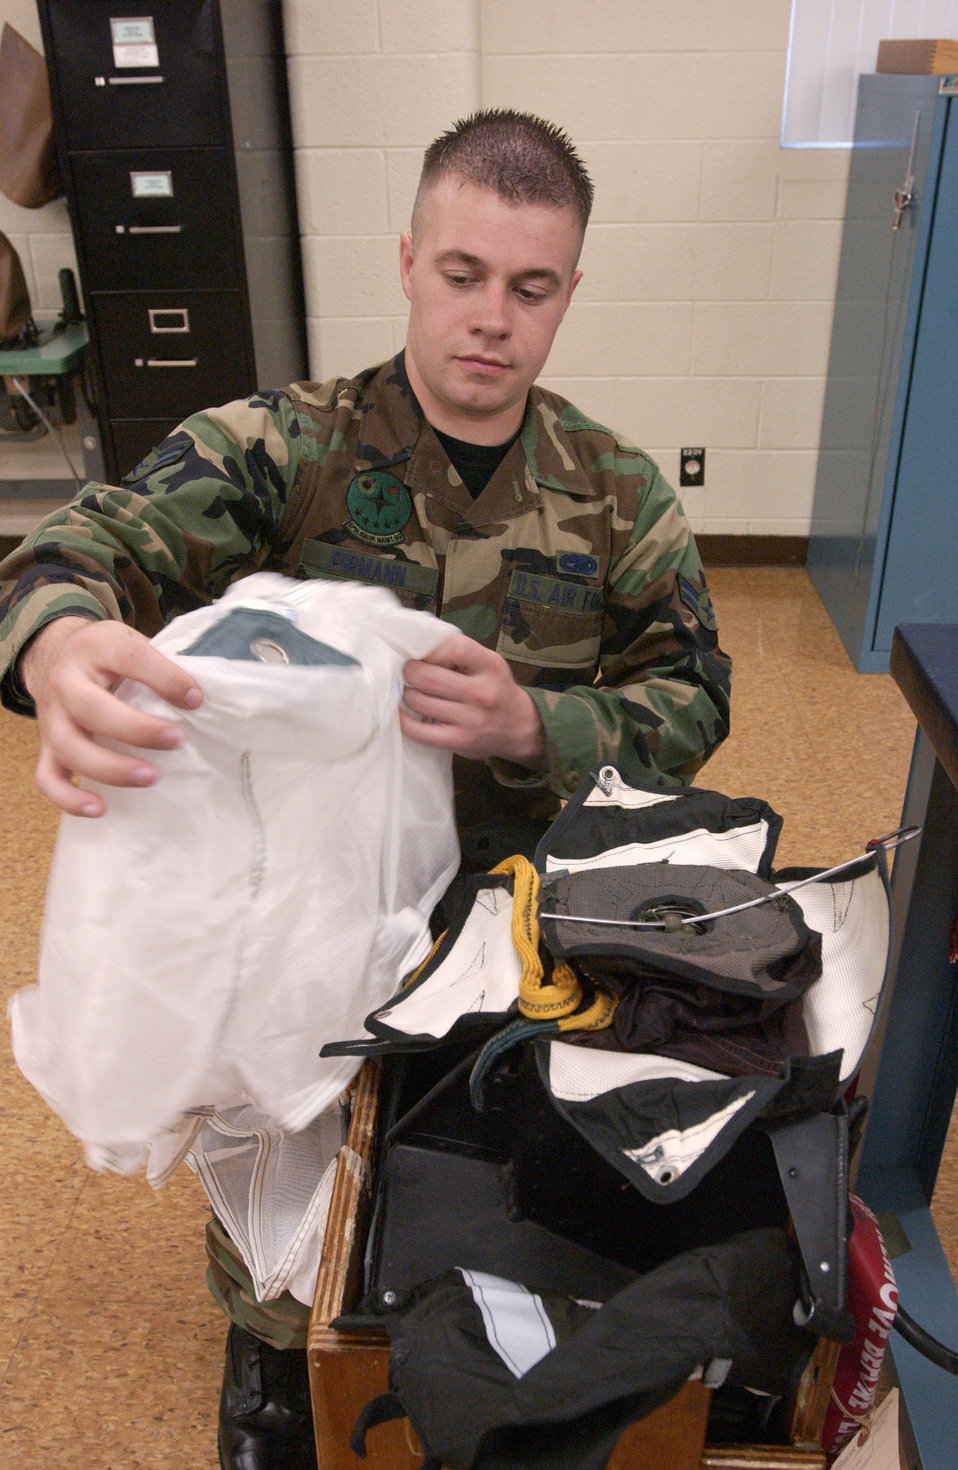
Three accidents; two Airmen; one chance to get it right

NELLIS AIR FORCE BASE, Nev. -- Airman 1st Class Brandon Pirmann inspects and repacks a pilot's parachute. He and other Airmen in the 57th Equipment Maintenance Squadron's survival equipment flight packed the parachutes for pilots involved in three aircraft accidents here within six months, helping to save their lives